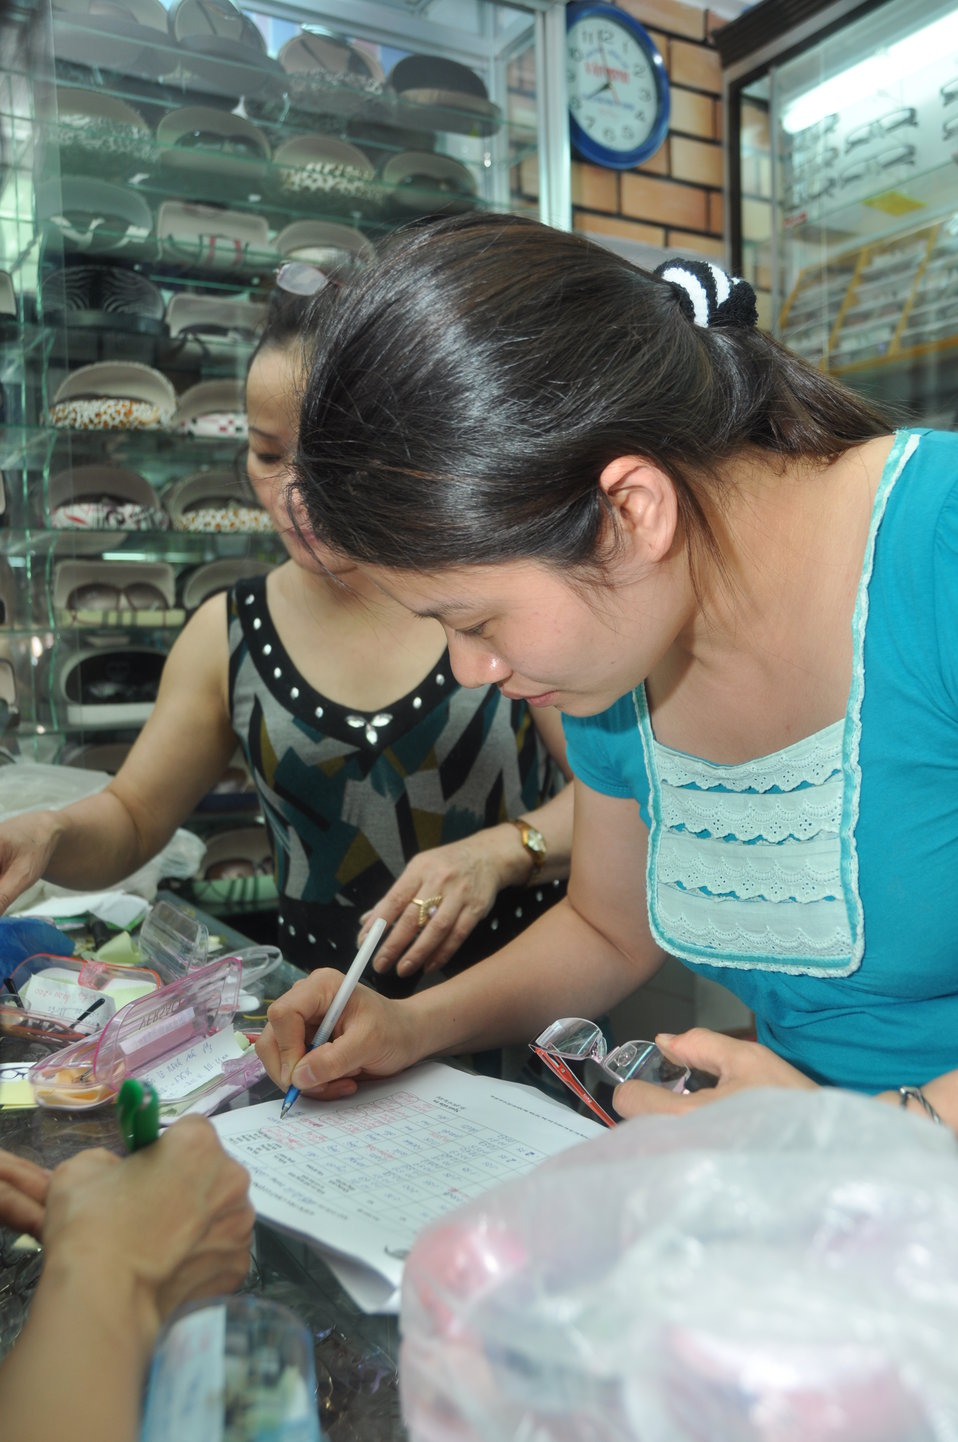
An eyeglasses specialist from the National Eye Hospital checks the quality of new glasses for students in Kon Tum.